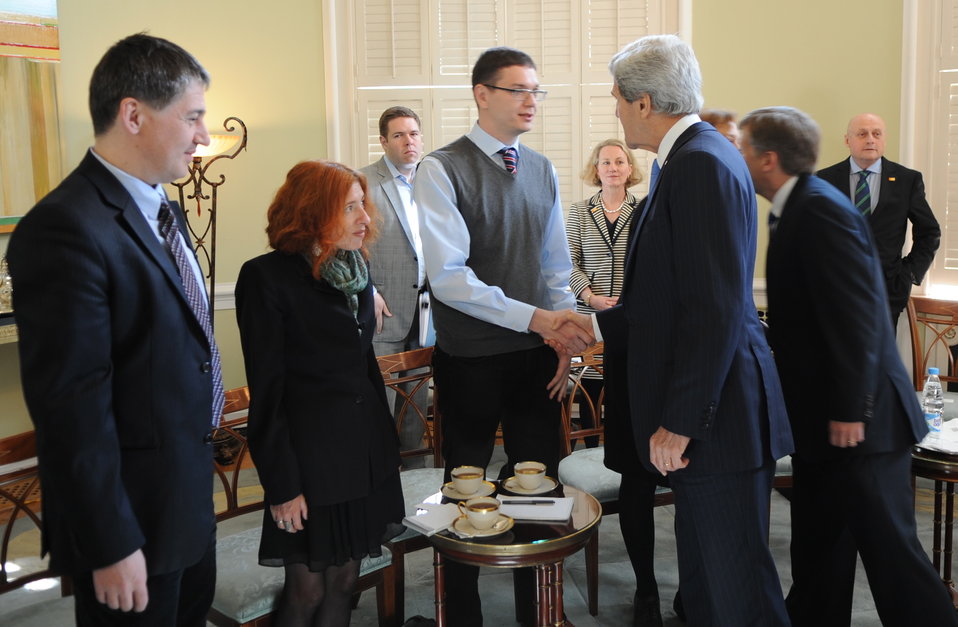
Secretary Kerry Meets With Russian Civil Society

U.S. Secretary of State John Kerry meets with a sampling of members from Russian civil society during a meeting at the U.S. ambassador's residence, the Spaso House, in Moscow, Russia, on May 8, 2013.